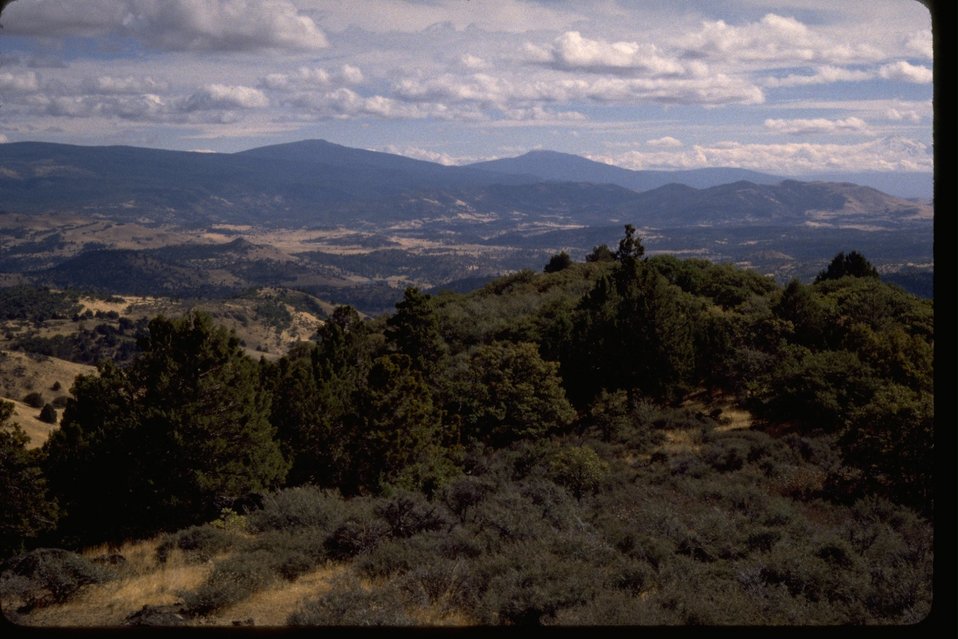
Scotch Creek Research Nature Area (RNA).